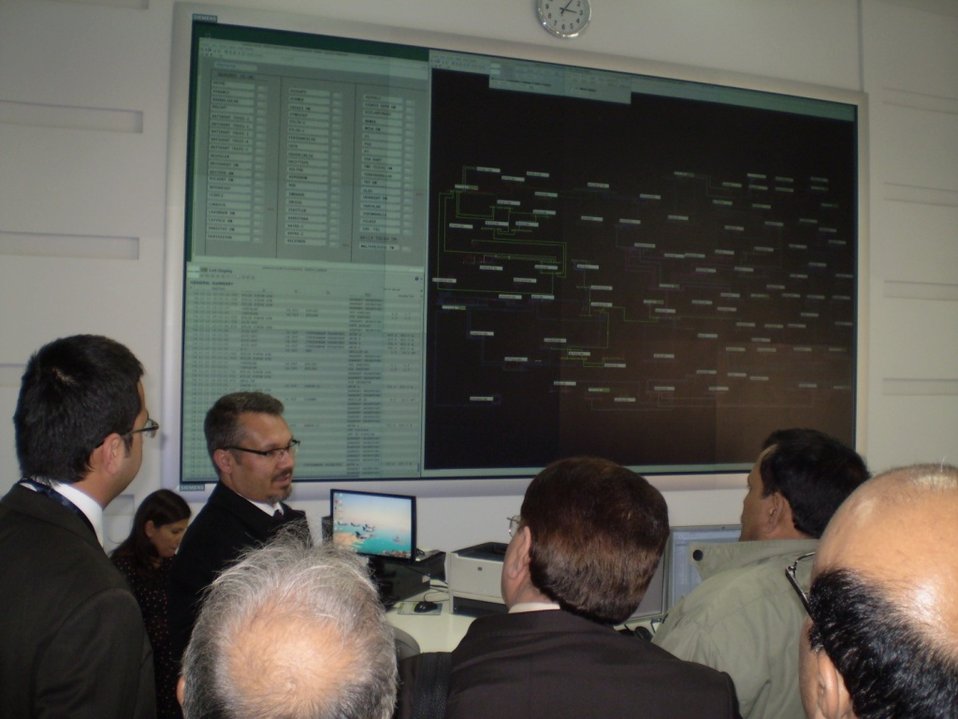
Delegates to Turkey under the Utility Exchange Program

USAID Power Distribution Program in liaison with United States Energy Association (USEA) organized a Utility Exchange Program in Istanbul and Ankara Turkey from November 1 2 - 19, 2011.Twelve delegates were selected from 9 DISCOs of Pakistan through a structured nominations and a selection process. The delegates visited the following number of power companies in Turkey:
1. BEDAS - Baskent Electricity Distribution Company, Ankara
2. TEDAS -Turkish Electricity Distribution Company, Ankara
3. AYEDA- Electricity Distribution Company, Istanbul
4. BEDAS - Electricity Distribution Company, Istanbul
The main focus of the Program was learning best practices and functions in Commercial Management, Financial Management and Customer Information Systems.